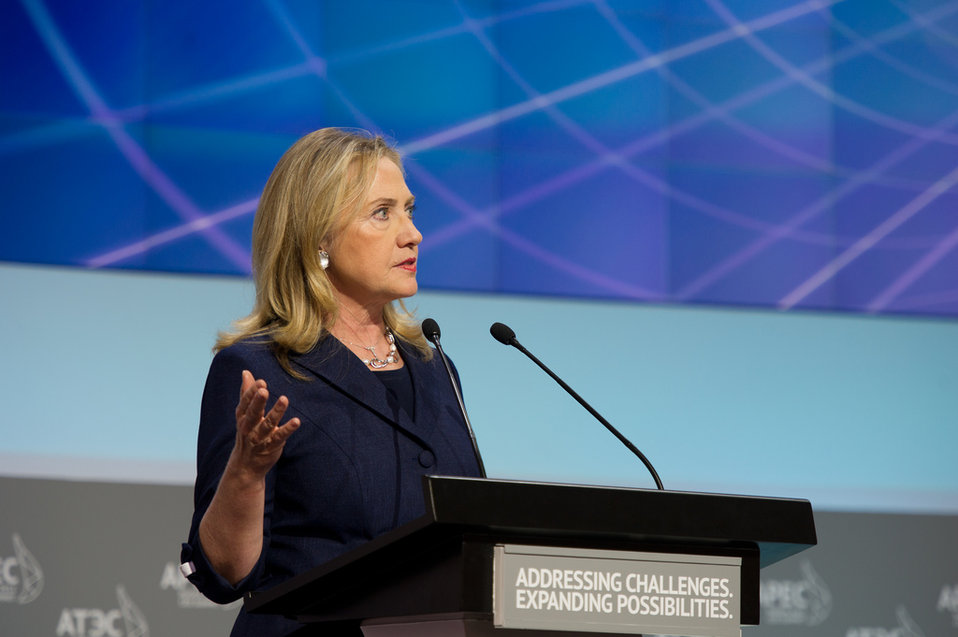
Secretary Clinton Speaks at the APEC CEO Summit

U.S. Secretary of State Hillary Rodham Clinton delivers remarks at the Asia-Pacific Economic Cooperation CEO Summit in Vladivostok, Russia, September 8, 2012.